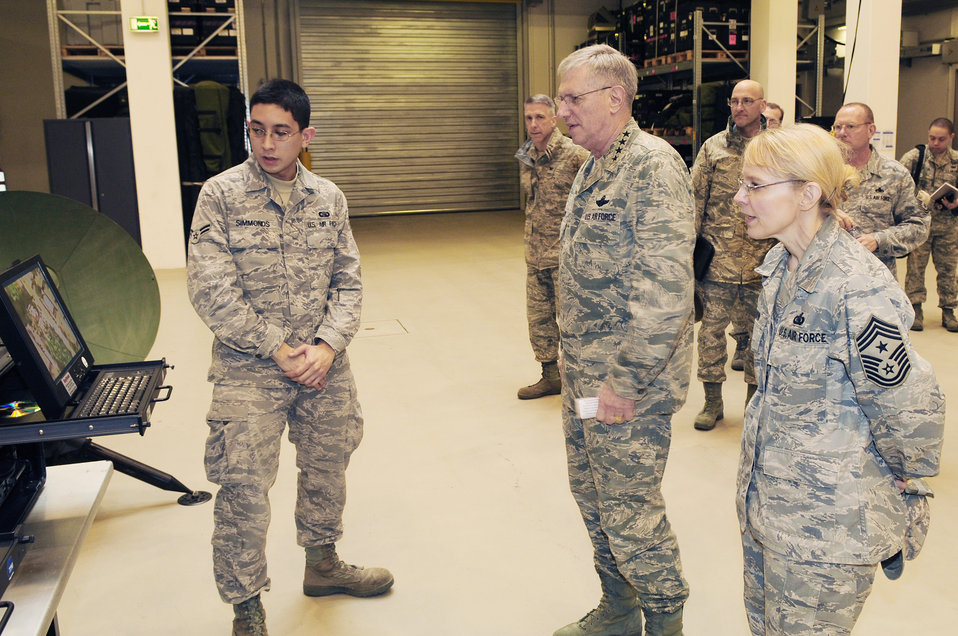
Visit to 435th Air Ground Operations Wing

Gen. Roger A. Brady, U.S. Air Forces in Europe commander, and Chief Master Sgt. Pamela Derrow, USAFE command chief master sergeant, receive a briefing about the Global Broadcast Service Communications suite from Airman 1st Class Saunder Simmonds, 1st Combat Communications Squadron, March 16, 2010. General Brady and Chief Derrow spent the day visiting the facilities of the 435th Air Ground Operations Wing at Ramstein Air Base, Germany, their first visit to USAFE's newest wing since it stood up in July 2009.